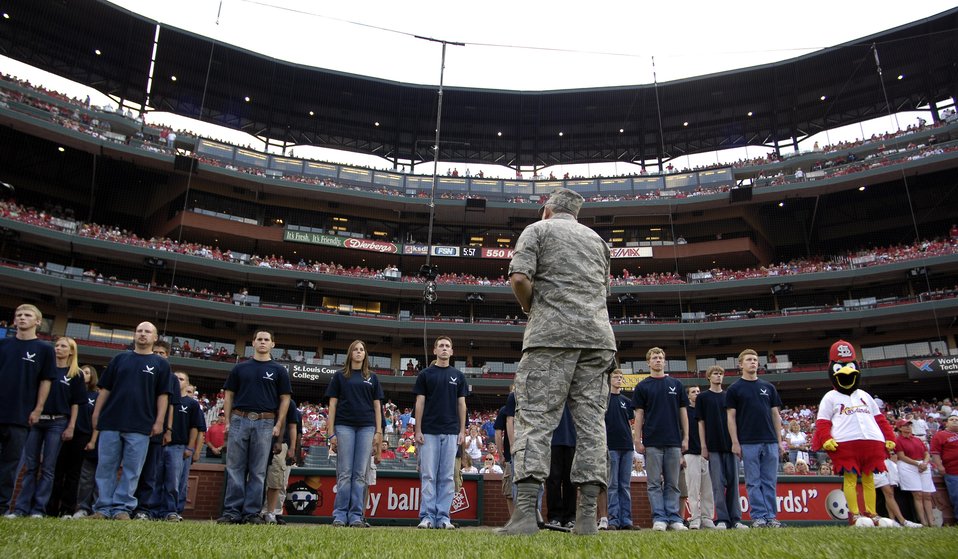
Air Force week in St. Louis

Gen. Duncan J. McNabb, Air Mobility Command commander at nearby Scott Air Force Base, Ill, addresses the crowd just before giving the Oath of Enlistment to 40 young men and women at a St. Louis Cardinals baseball game July 7 during Air Force Week in St. Louis. The soon-to-be Airmen were enlisted during pregame activities as Fredbird, the Cardinal mascot, joined in the festivities.